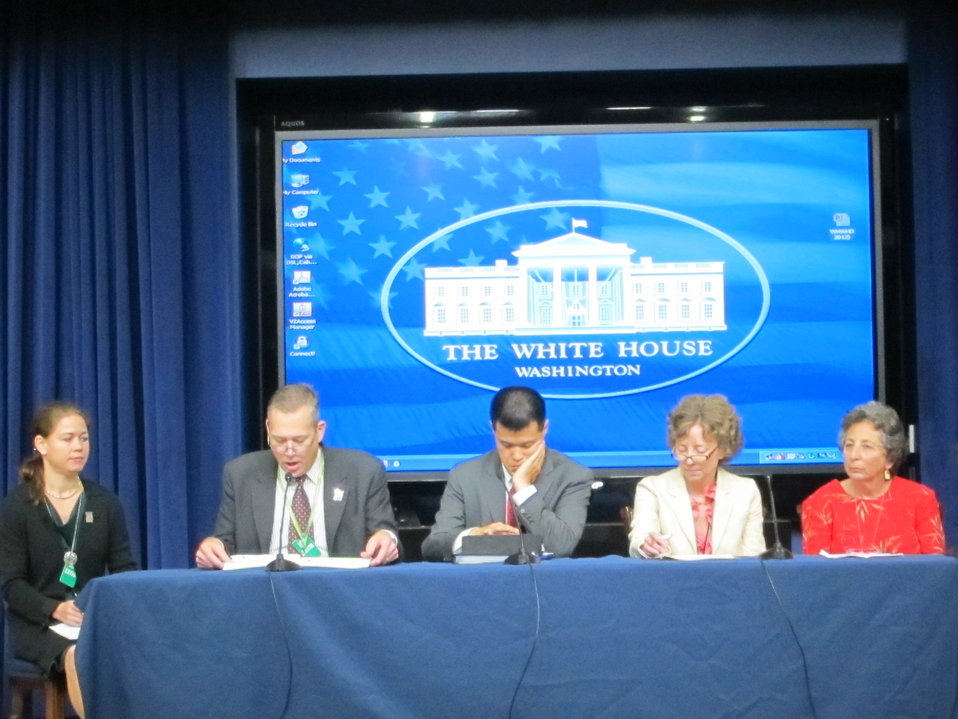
WH 2012 World Hepatitis Day Event